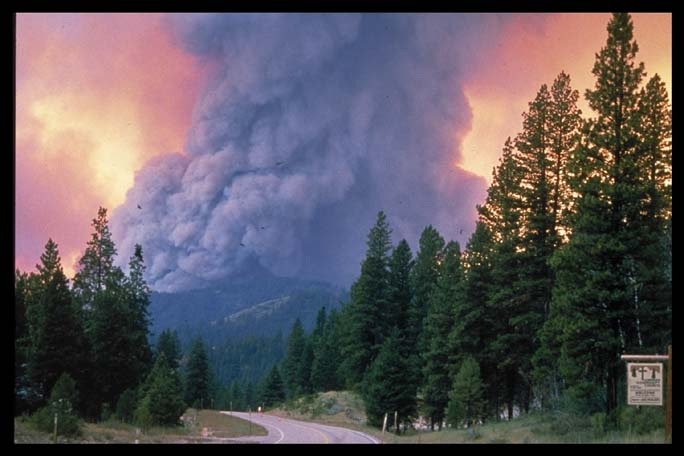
Wildland fire